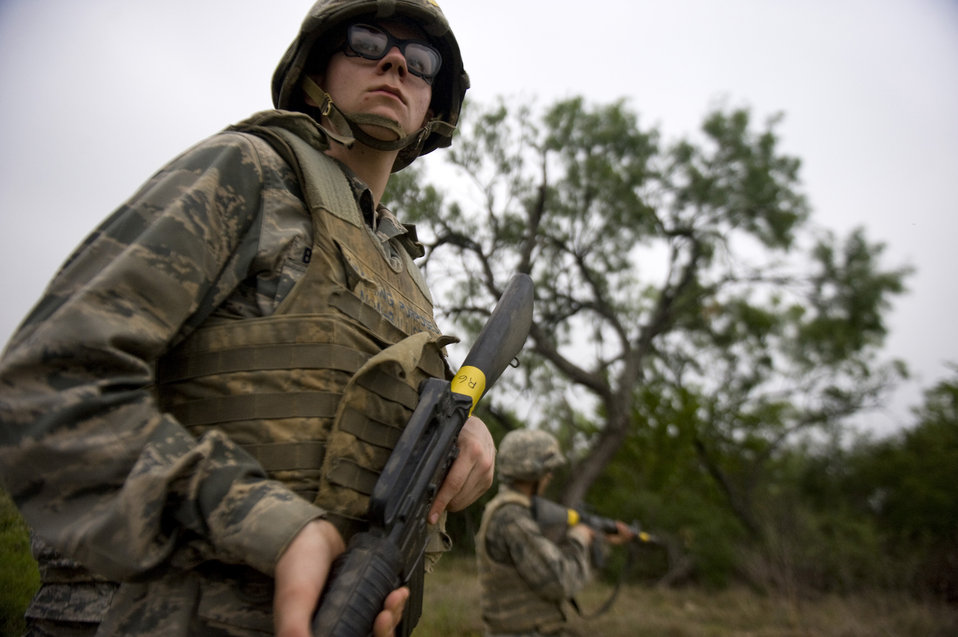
BEAST

Basic trainees go through their sixth week of Air Force basic military training at the Basic Expeditionary Airman Skills Training on May 25, 2011, at Lackland Air Force Base, Texas.